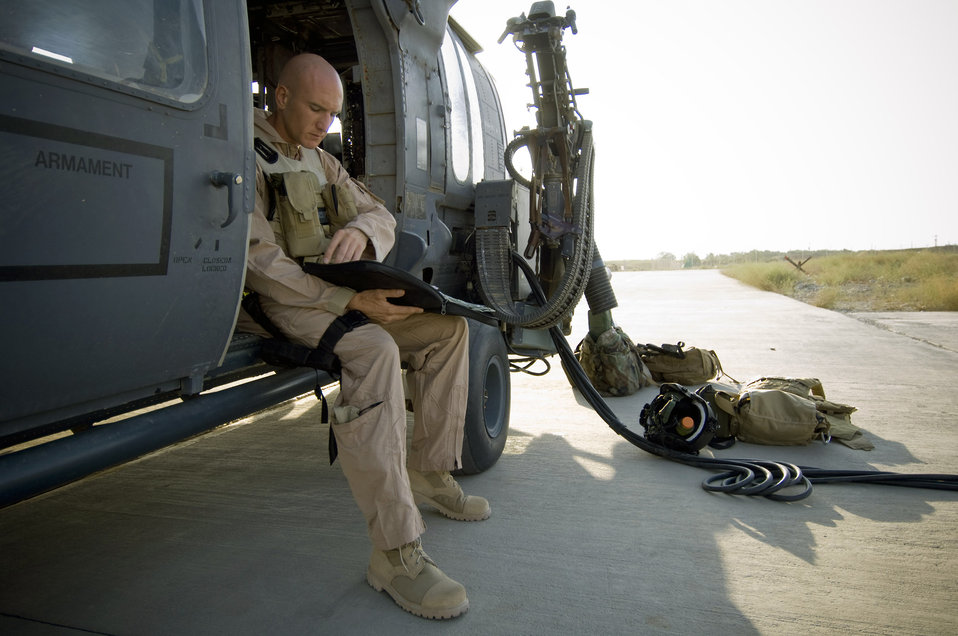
Flying with the Pave Hawks

Capt. Tavis McDevitt, a 33rd Expeditionary Rescue Squadron pilot, reads through preflight paperwork Aug. 2 at Bagram Air Base, Afghanistan. Captain McDevitt is deployed from the 33rd Rescue Squadron at Kadena AB, Japan.